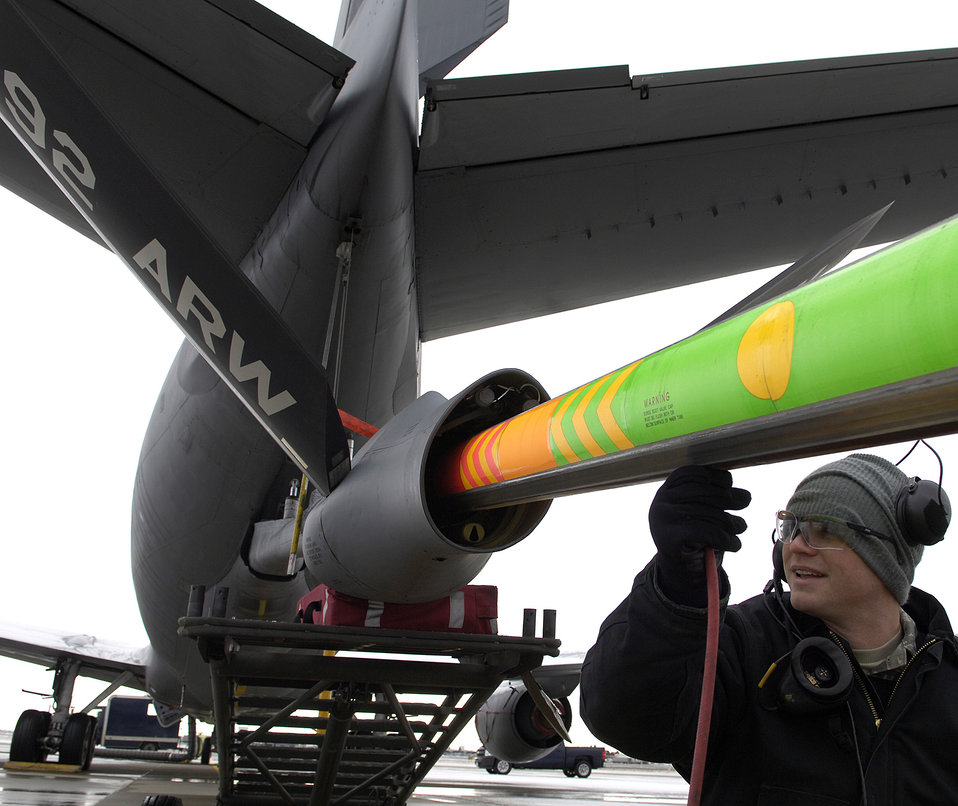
Good to go

Senior Airman John Bennett inspects the boom of a KC-135 Stratotanker Jan. 20, 2011, at Spokane International Airport, in Spokane, Wash. Airman Bennett is a hydraulics specialist from Scott Air Force Base, Ill., and is on temporary duty here for aircraft maintenance training.